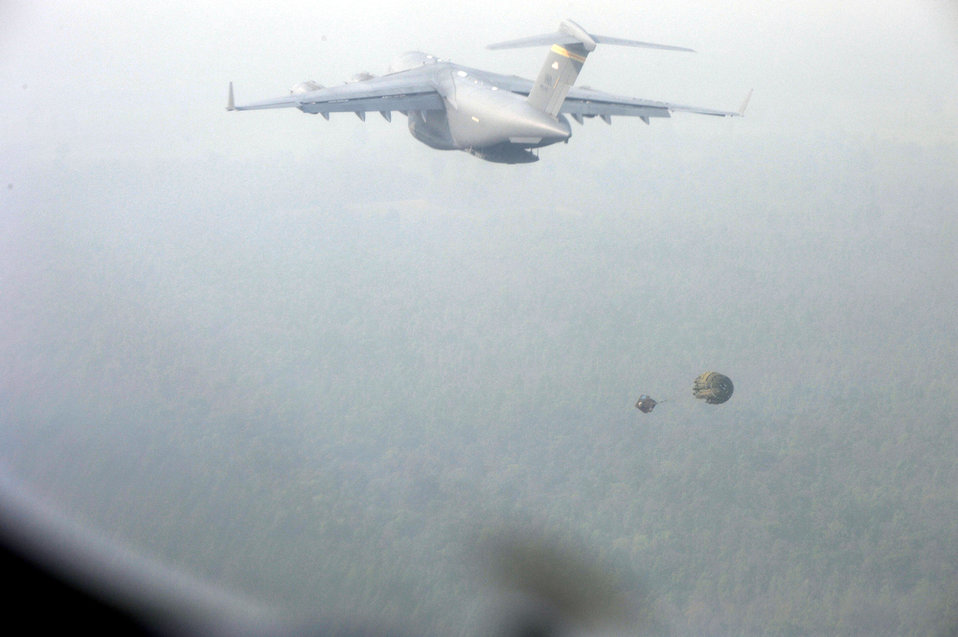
Multi-aircraft mission provides key training in Thailand

Simulated cargo is ejected from the back of a C-17 Globemaster III during an airdrop training mission supporting Cope Tiger 2010 March 8, 2010, in Thailand. The C-17 is from Joint Base Pearl Harbor Hickam, Hawaii. The C-17 is from the